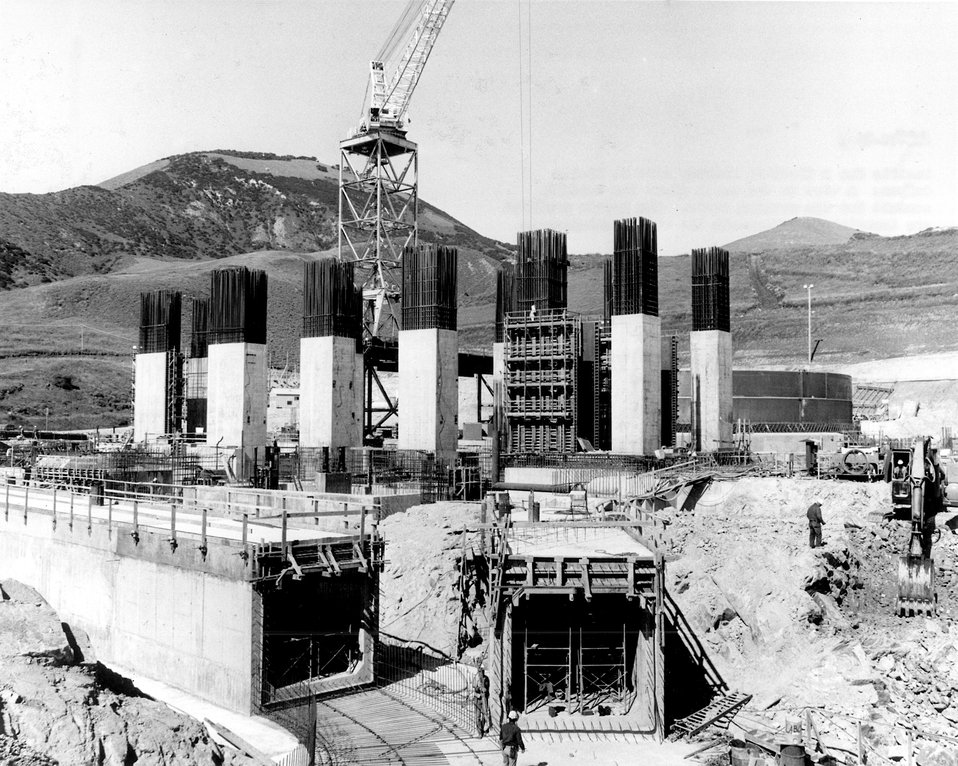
Pacific Gas & Electric Company site at Diablo Canyon: a view to the north shows the outfall conduit for the cooling water. The intake conduits are immediately underneath the worker standing in the middle foreground. Circa 1970.